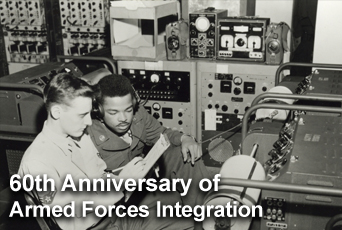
Military integration

The armed forces has helped pioneer much of the change in America since the signing of Executive Order 9981, integrating the military.